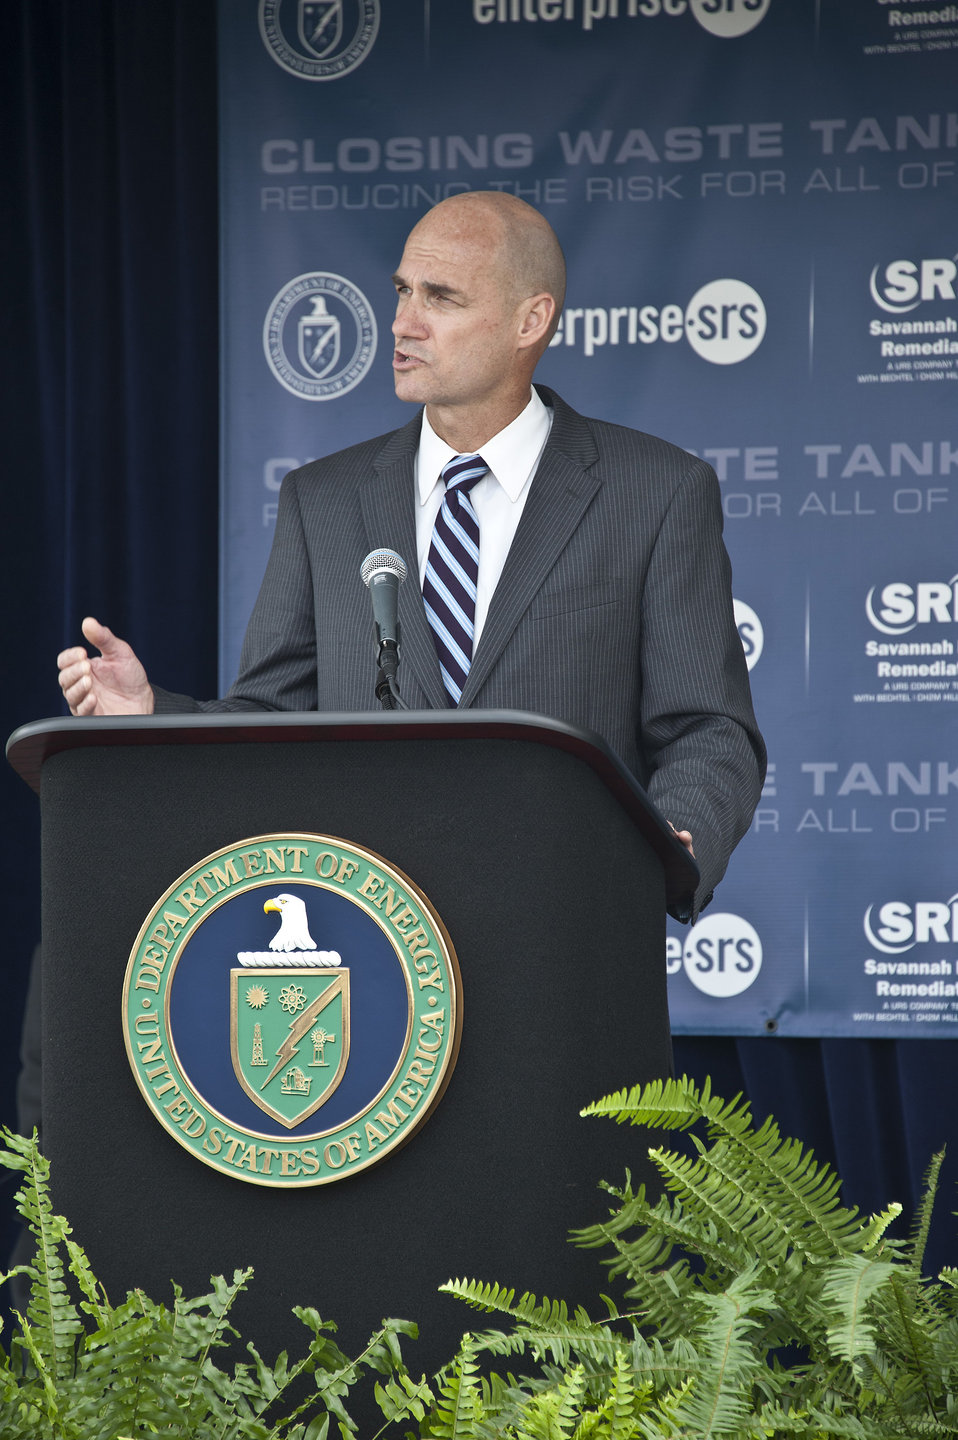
Thomas P. D’Agostino, Undersecretary for Nuclear Security and Administrator, NNSA speaking at the formal tank closure celebration in H Area